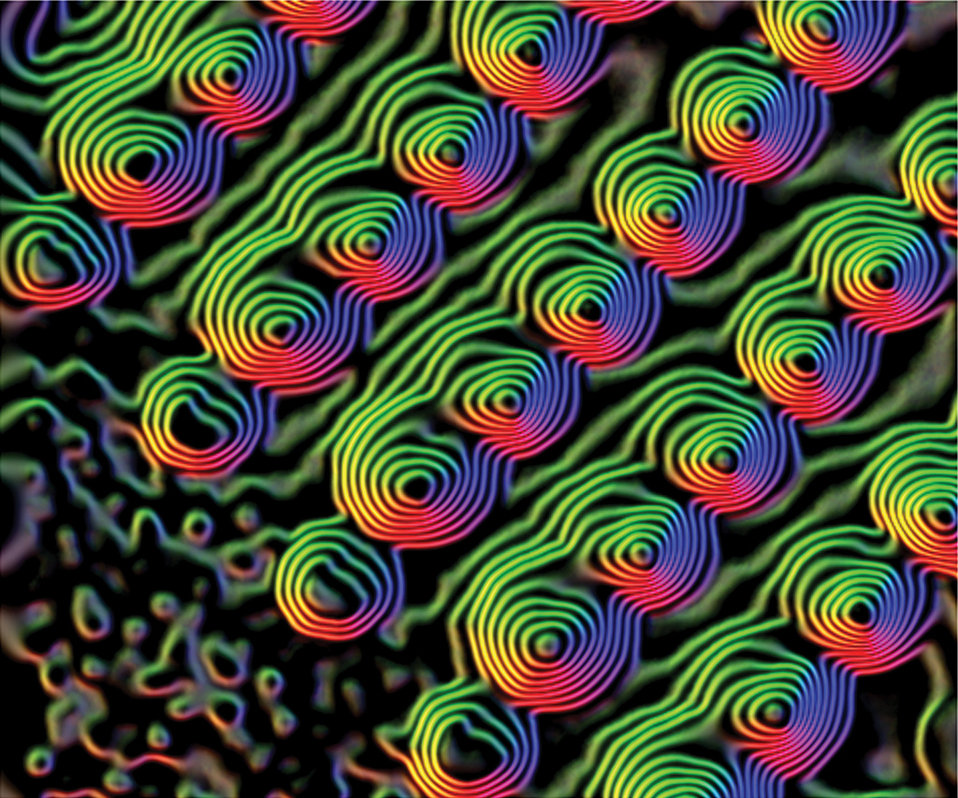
MAP SHOWING MAGNETIC FLUX LINES FOR NICKLE NANOPARTICLES AT BROOKHAVEN NATIONAL LAB.